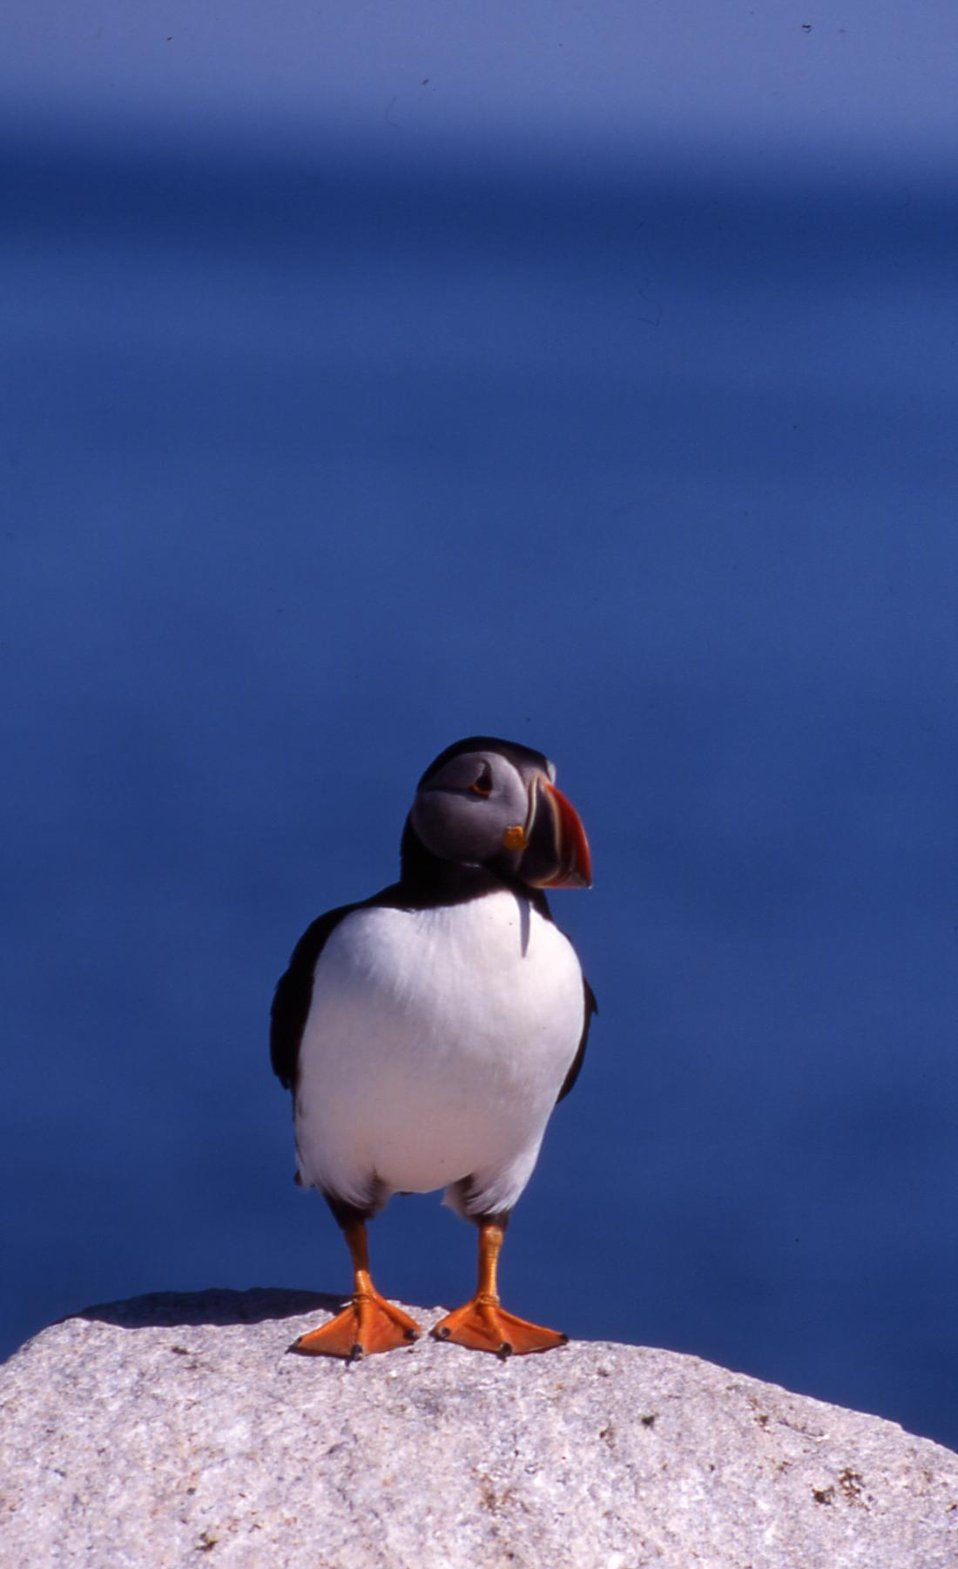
Atlantic puffin at Maine Coastal Island National Wildlife Refuge